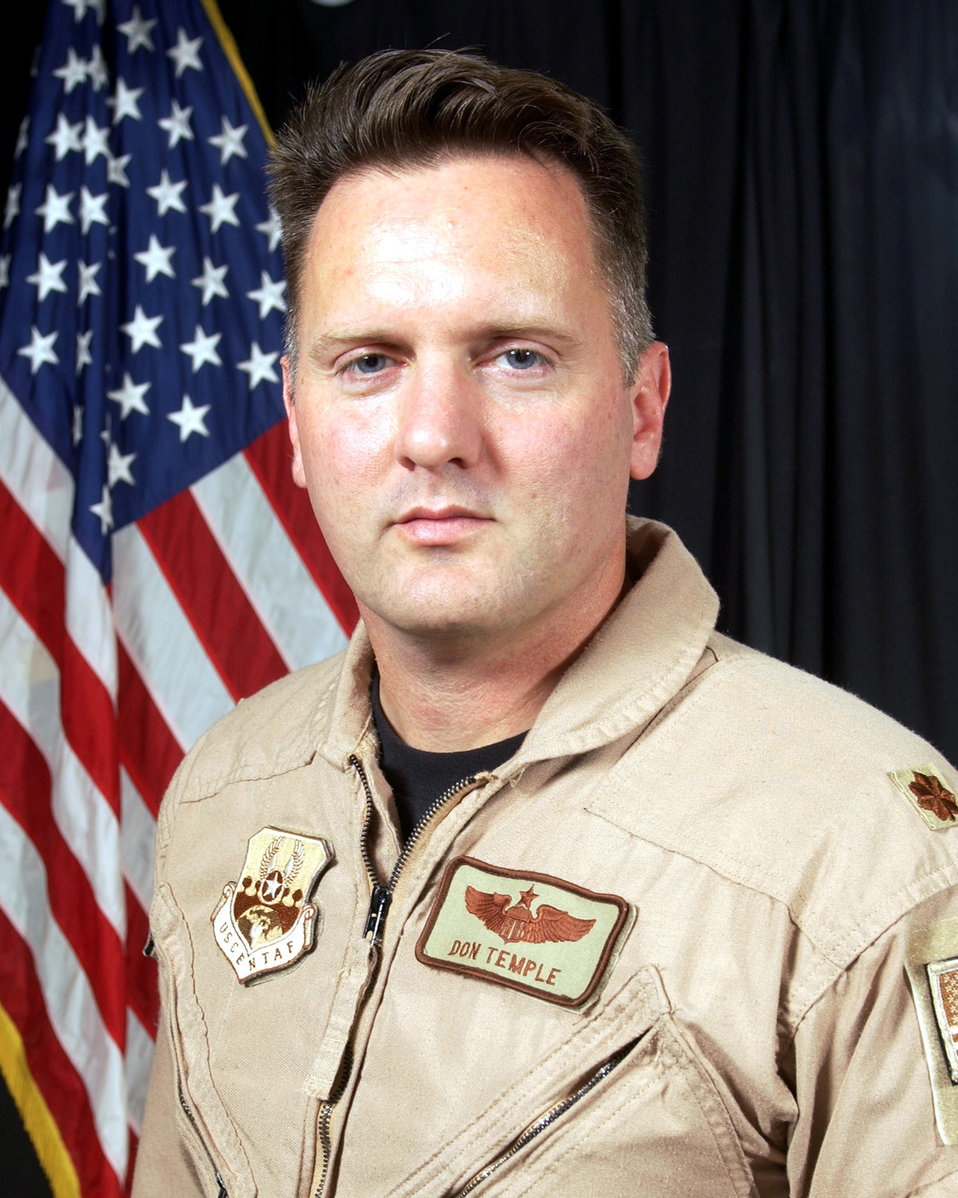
Pilot discovers he's not 'American' after all

SOUTHWEST ASIA -- Maj. Donald Temple discovered he was not an American citizen when he applied for a passport before deploying. He is a U-2 pilot assigned to the 99th Expeditionary Reconnaissance Squadron and deployed from Beale Air Force Base, Calif.